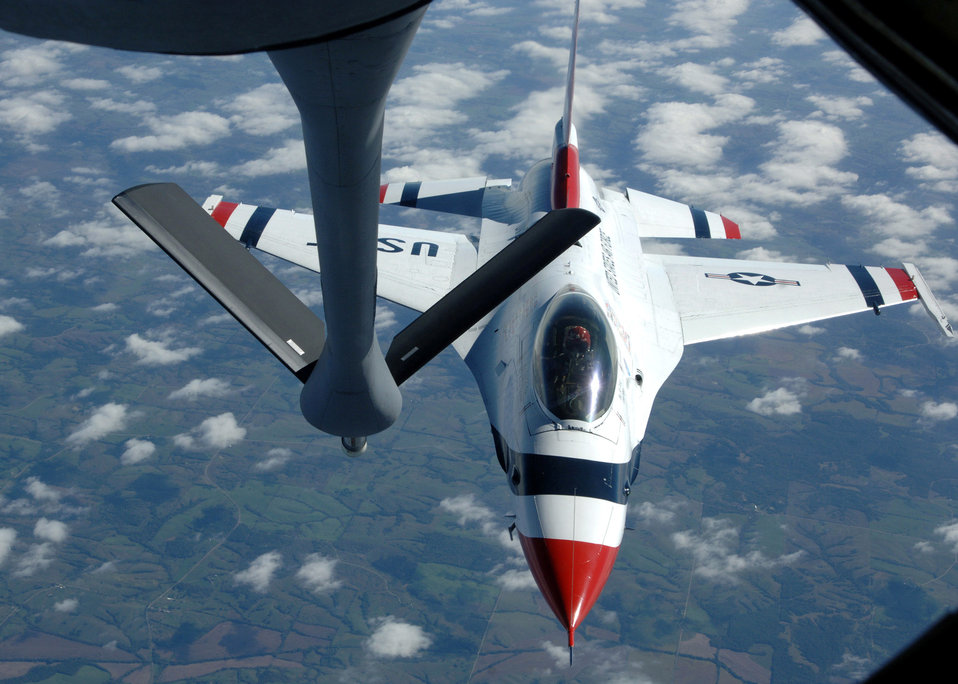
Refueling Thunderbirds

An Air Force Thunderbirds pilot pulls away after taking on fuel from a KC-135 Stratotanker Oct. 1 over the Midwest during a refueling mission. The Thunderbirds are the Air Force's premier demonstration squadron. The F-16 Fighting Falcon team represents the Air Force throughout the nation and abroad. The KC-135 is assigned to the 319th Air Refueling Wing tanker from Grand Forks Air Force Base, N.D.